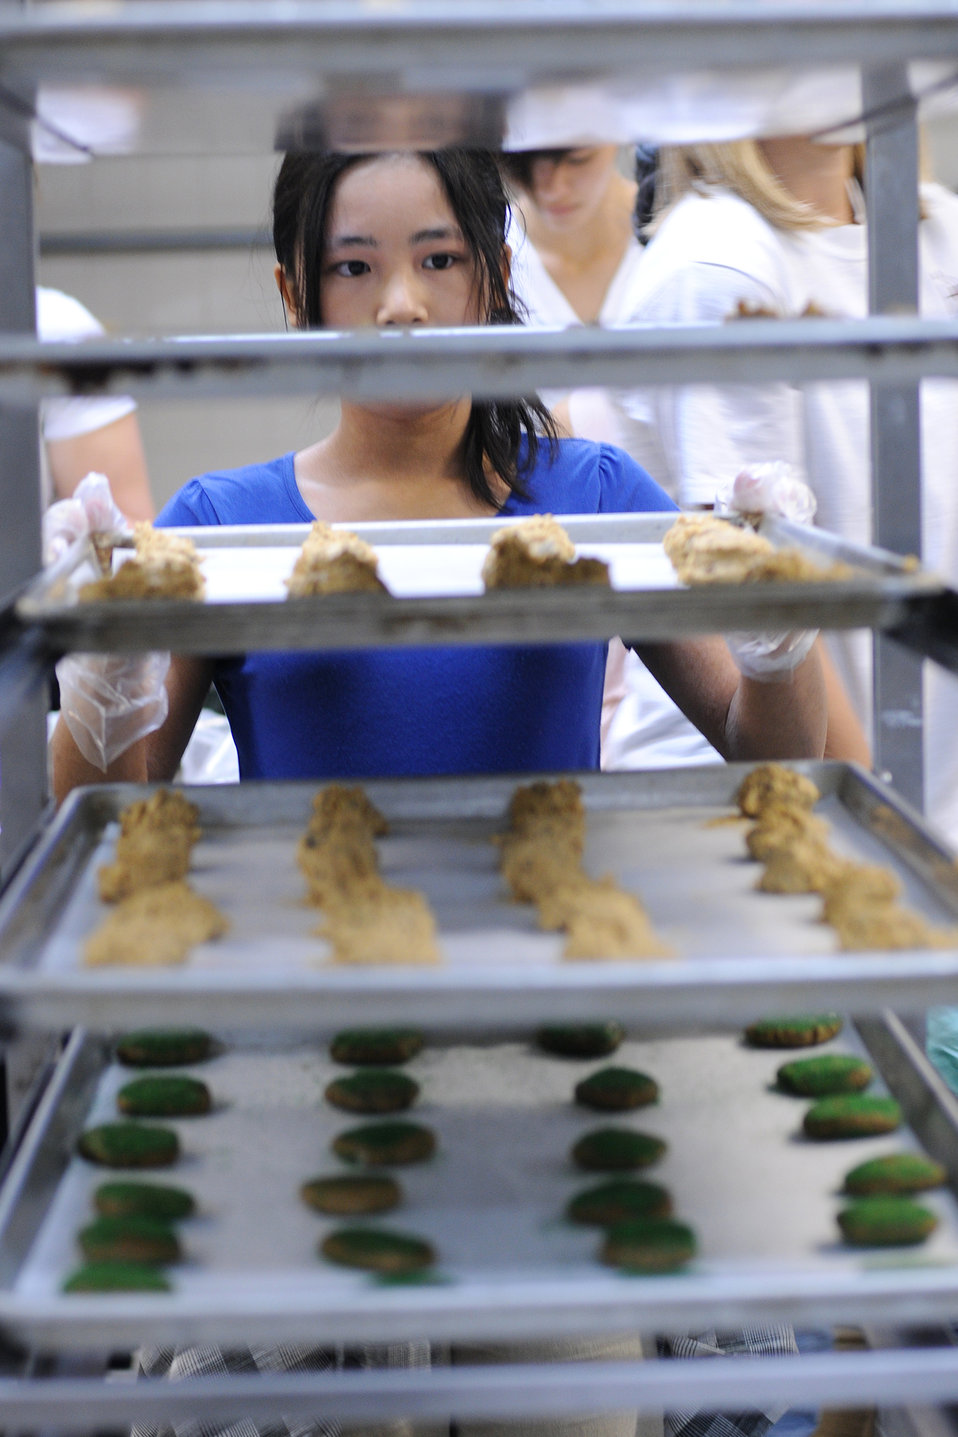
Kadena Cookie Drop

Christine Comia, a member of the National Honor Society from Kadena High School, prepares to bake a batch of cookies Nov. 19 at the 18th Force Support Squadron's central kitchen on Kadena Air Base, Japan. Volunteers prepared more than 24,000 cookies that will be delivered to servicemembers living in the dorms here at Kadena.